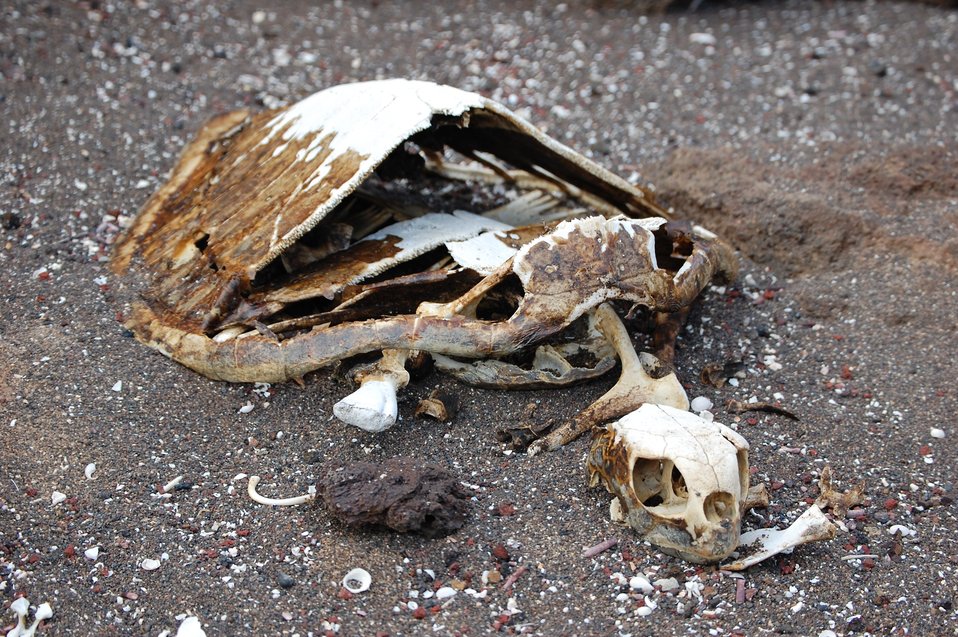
Turtle skeleton.